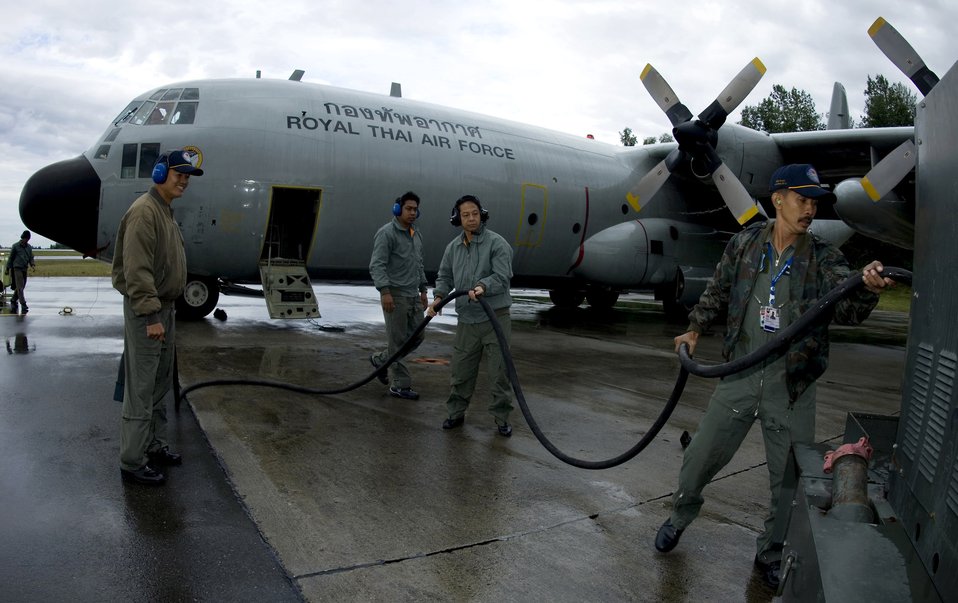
Elmendorf, coalition forces hone skills at Red Flag-Alaska

C-130 maintainers with the Royal Thai air force work through their pre-flight maintanence checks on their aircraft on the rain-soaked runway of Elmendorf Air Force Base, Alaska, July 23 during Red Flag-Alaska 2007. More than 80 aircraft and 1,500 servicemembers from the six countries are flying together in this multinational exercise that provides realistic combat training in a safe and controlled setting over the Pacific Alaskan Range Complex and Eielson AFB, Alaska.